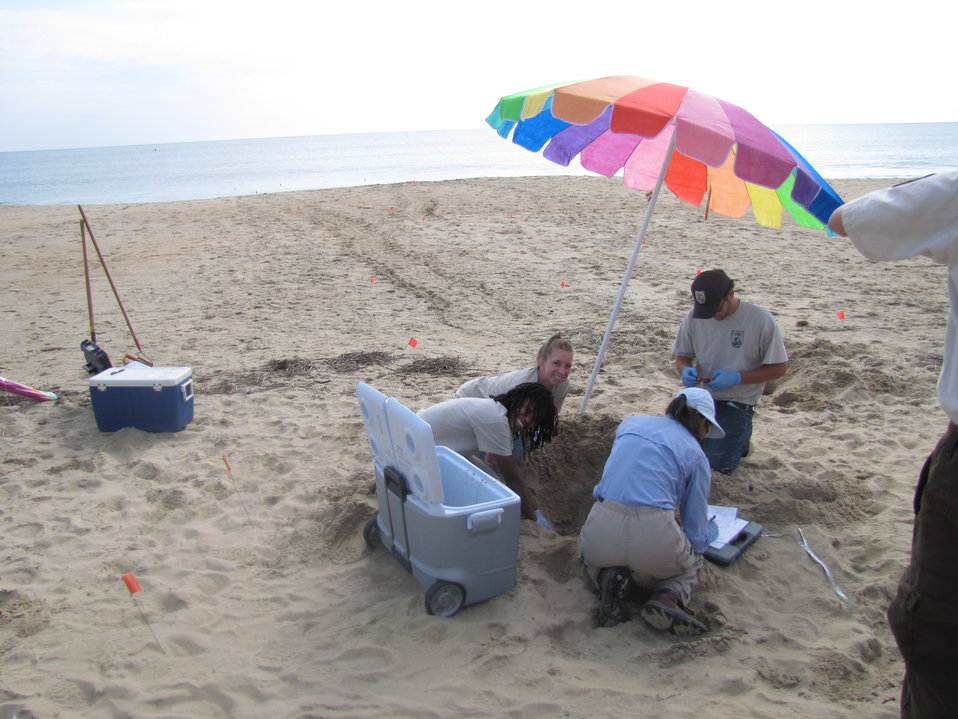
Preparing to relocate the eggs

Credit: USFWS
Crawl 2, Nest 2